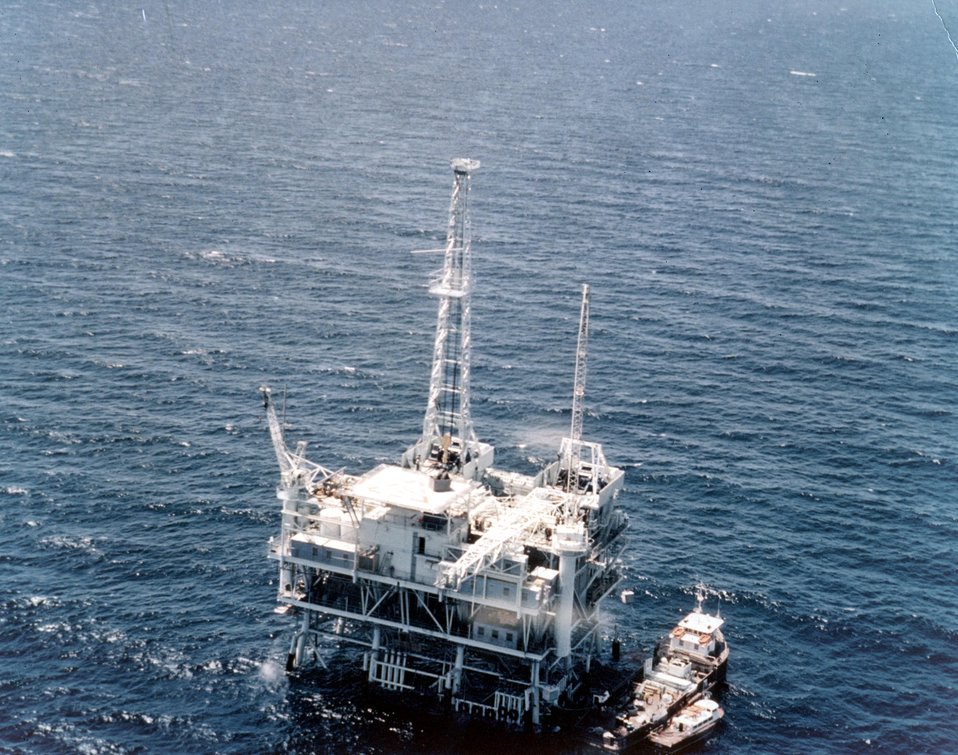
Offshore drilling, Santa Barbara Channel. c. undated